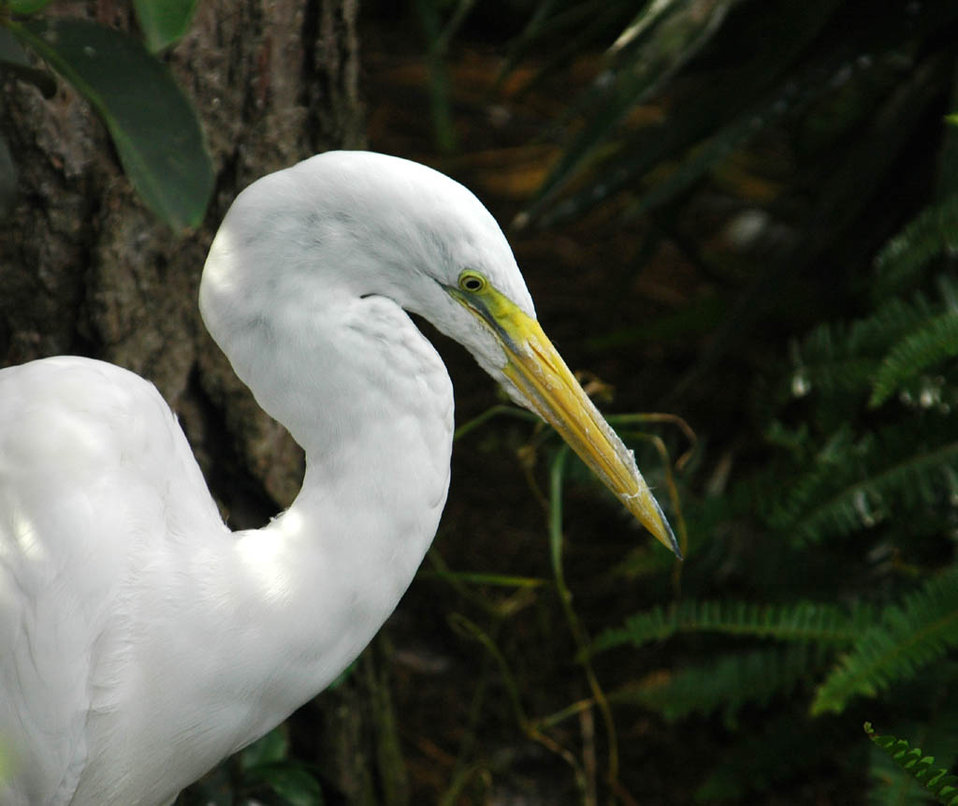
Uploaded by request of Richard Opiekun

Taken in Orlando, Florida.

'The iridescent ibis' The bird was part of an exhibit at Walt Disney World and was seen foraging for food
near some foliage.